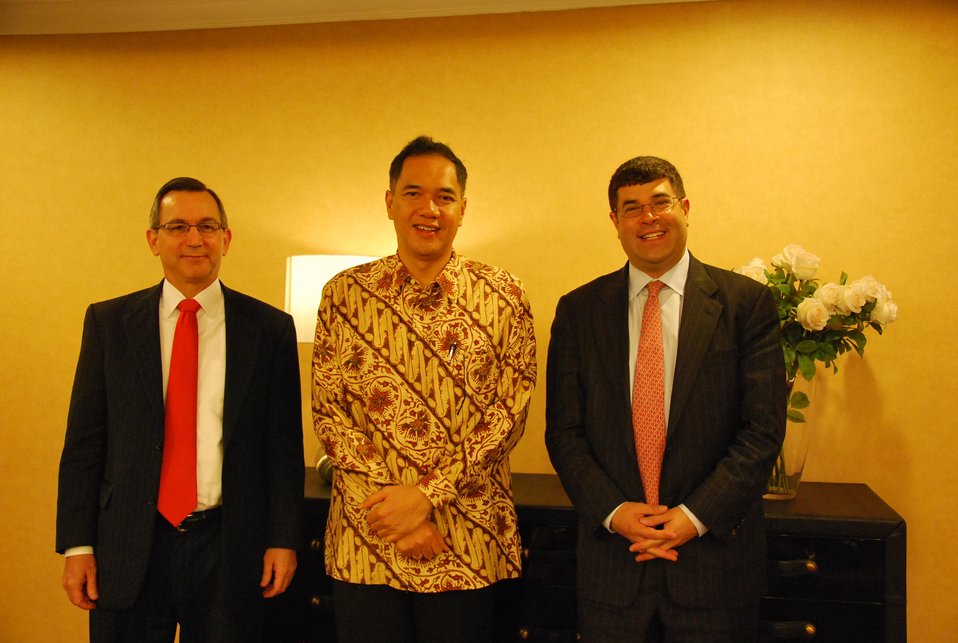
Deputy Secretary Wolin's Trip to the Pacific Rim

On Thursday, May 19, 2011, Deputy Secretary Wolin met with Indonesia Investment Coordinating Board Chairman Gita Wirjawan. He was accompanied by Ambassador Scot Marciel.